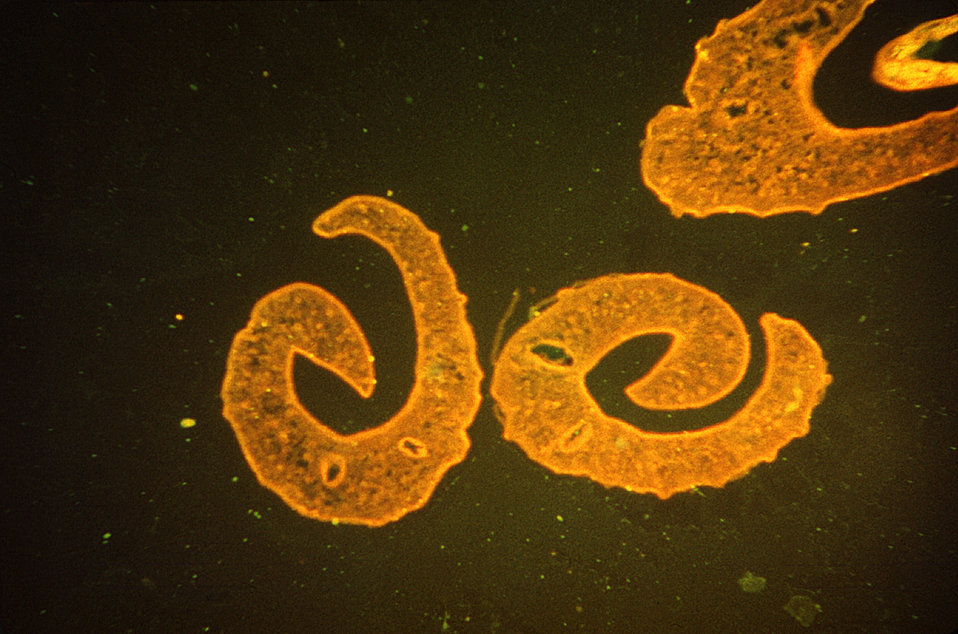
Under a low magnification of 78X, and stained using an indirect fluorescent antibody (IFA) test, this photomicrograph confirmed the presence of Schistosoma mansoni trematodes.Laboratory Diagnosis for Schistosomiasis: